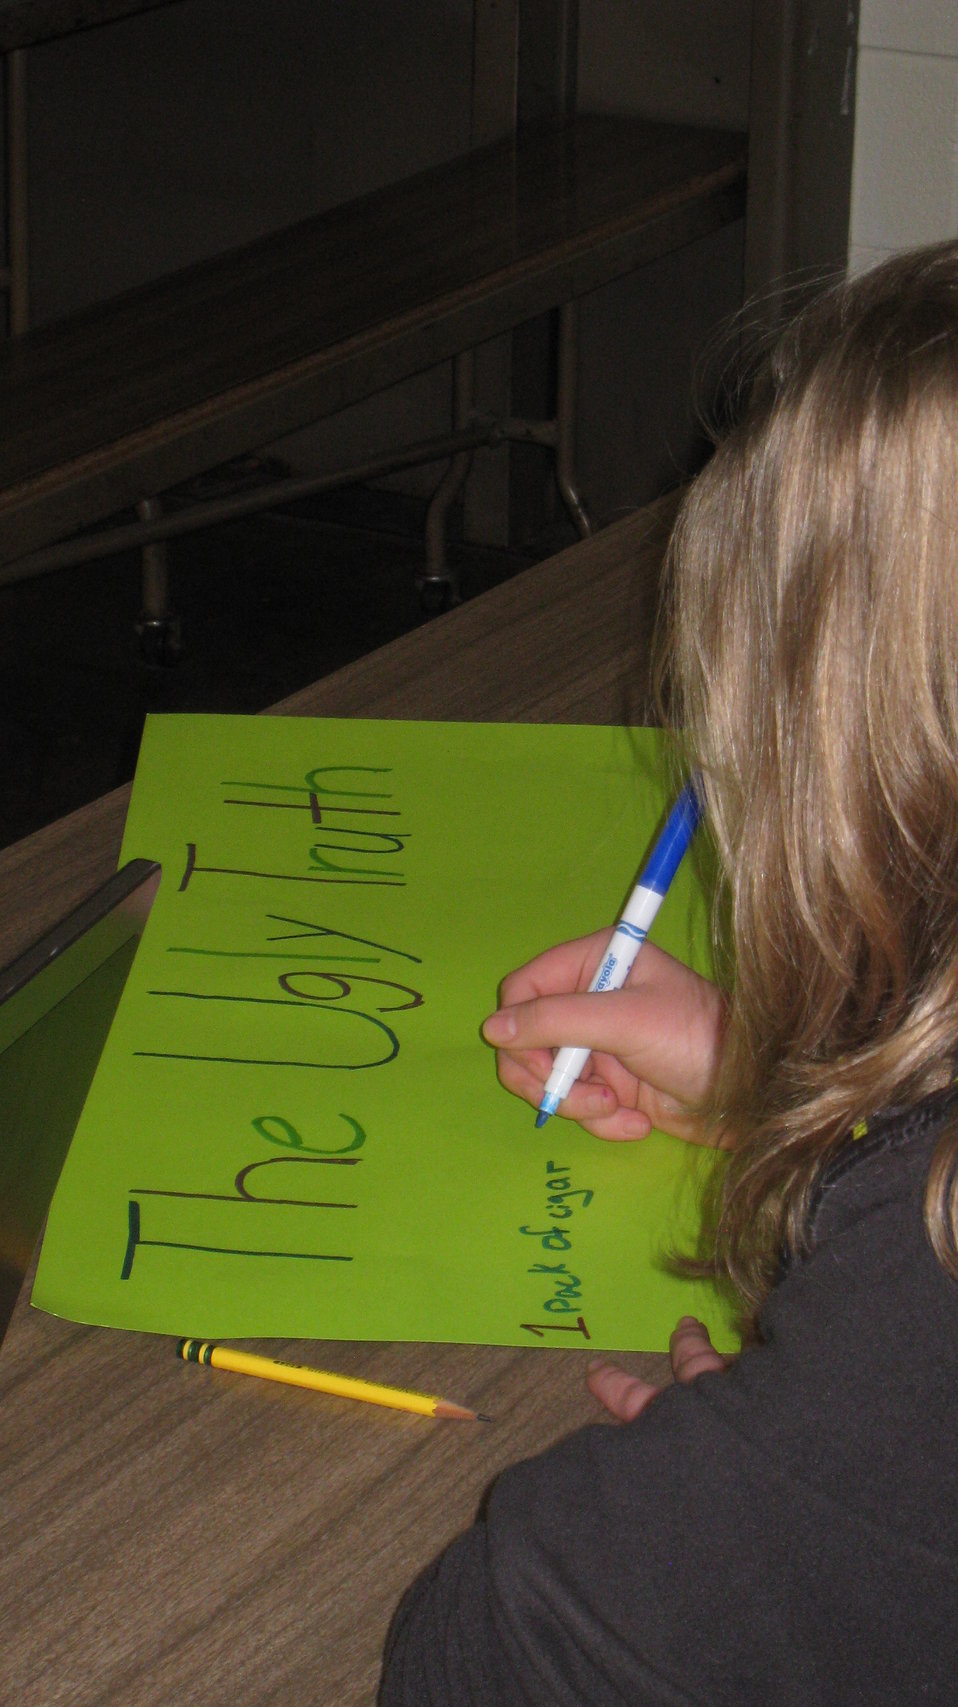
The Ugly Truth: NDFW 2014

Teenagers from the Van Buren County SAFE Coalition's, Youth Leadership Council (YLC) in Keosauqua, Iowa participate in various events during National Drug Facts Week, 2014.